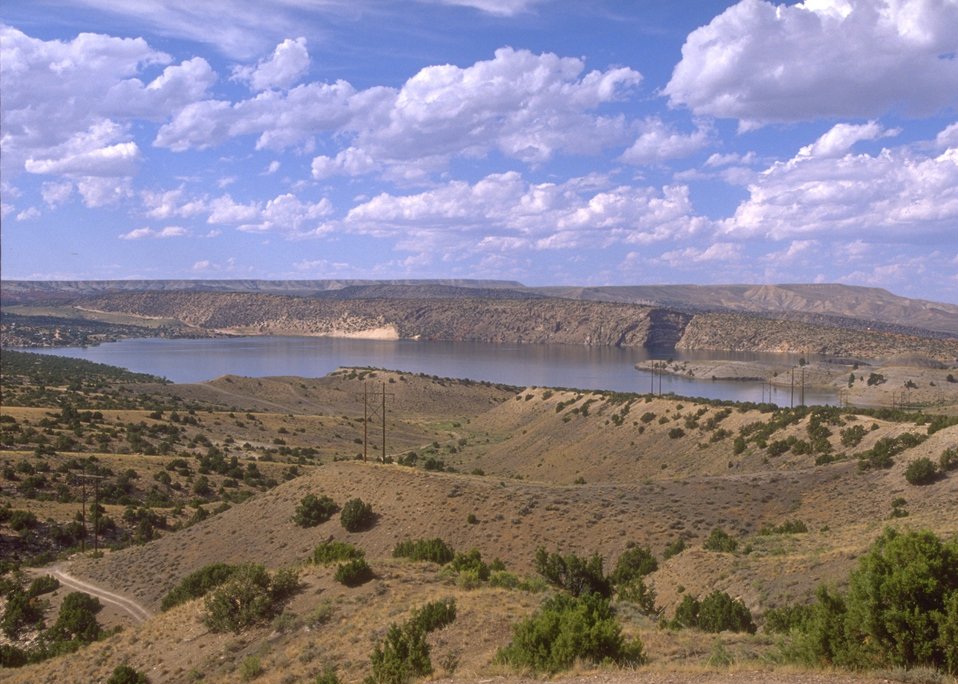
Landscape along the Alcova/Seminoe Back Country Byway south of Alcova, Rawlins Field Office.